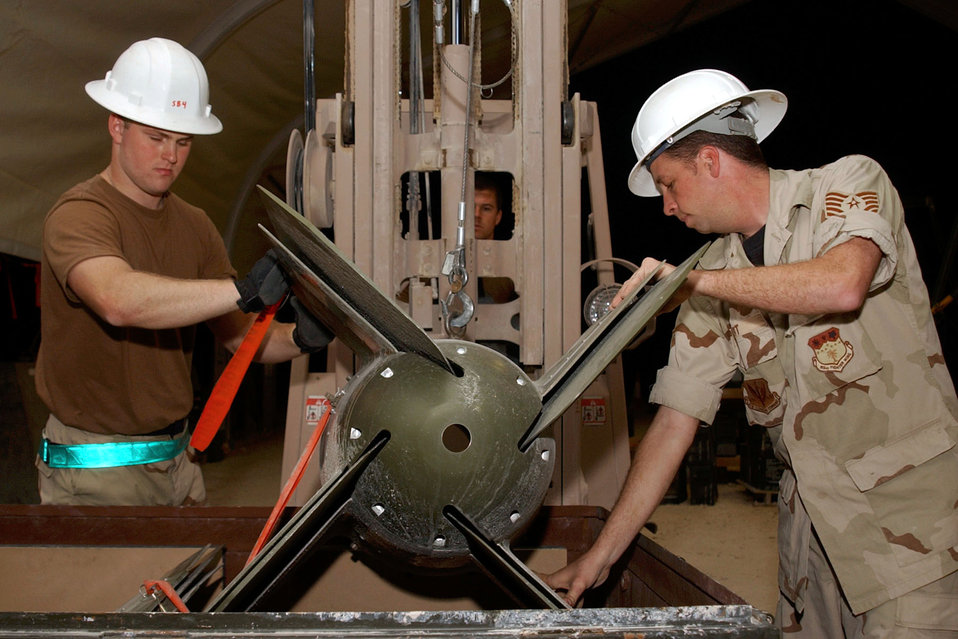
Small bombs

OPERATION IRAQI FREEDOM -- Senior Airman Josh Lebrun (left) from the South Dakota Air National Guard and Tech. Sgt. Edward Hart from the South Carolina Air National Guard are at work in the